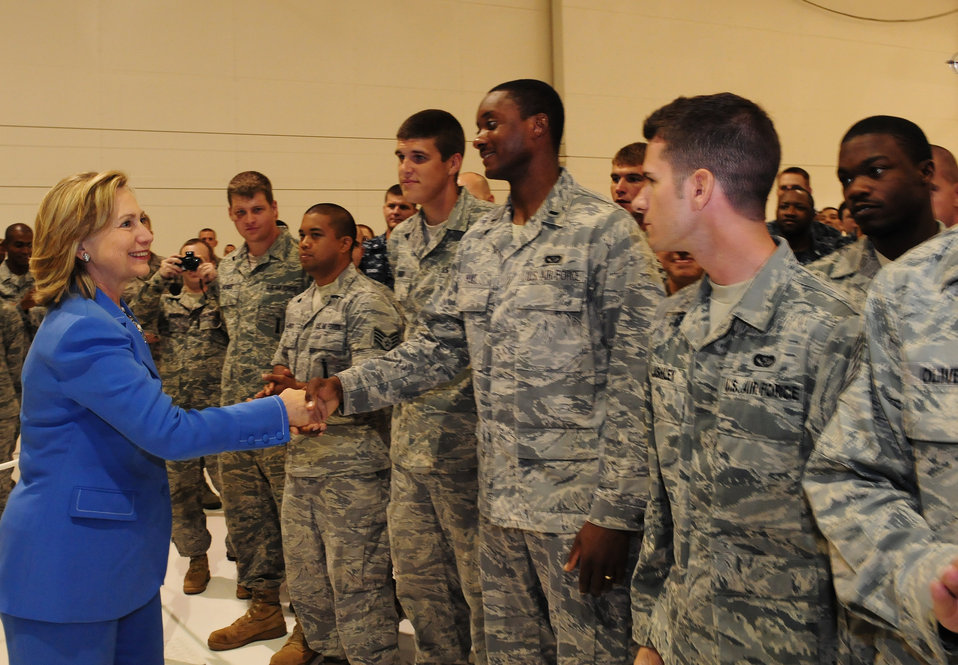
Secretary Clinton Shakes Hands With Servicemembers

U.S. Secretary of State Hillary Rodham Clinton shakes hands with U.S. servicemembers at Andersen Air Force Base in Guam on October 29, 2010.